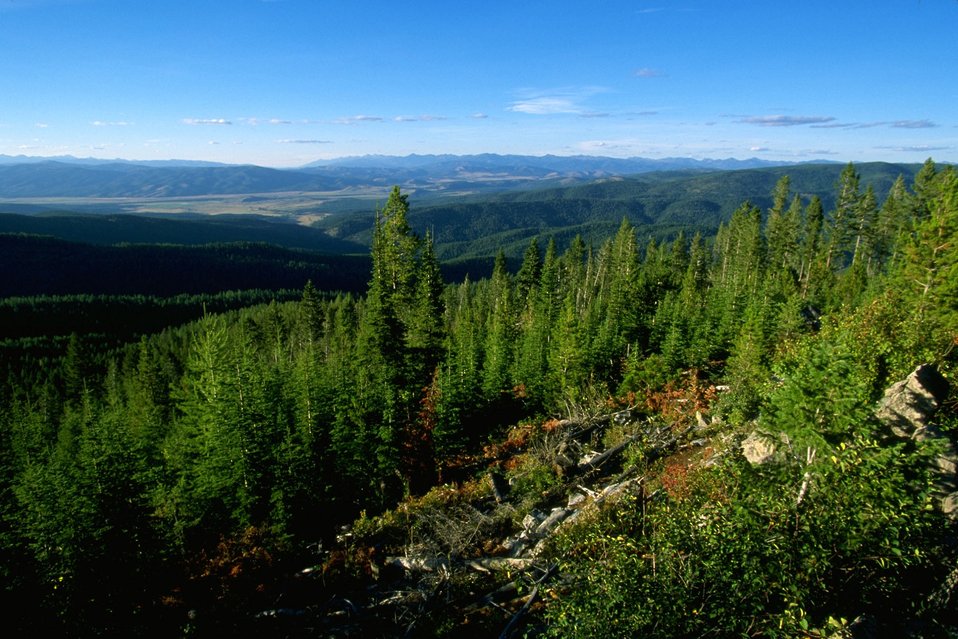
Garnet Back Country Byway--view from overlook